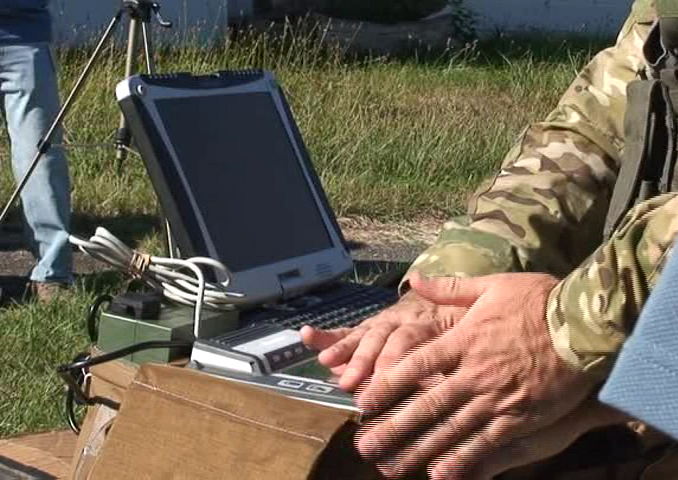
Mobile Fingerprint ID

Watching the FBI work in the field helped the NIST team design the 'Quick Capture Platform.'